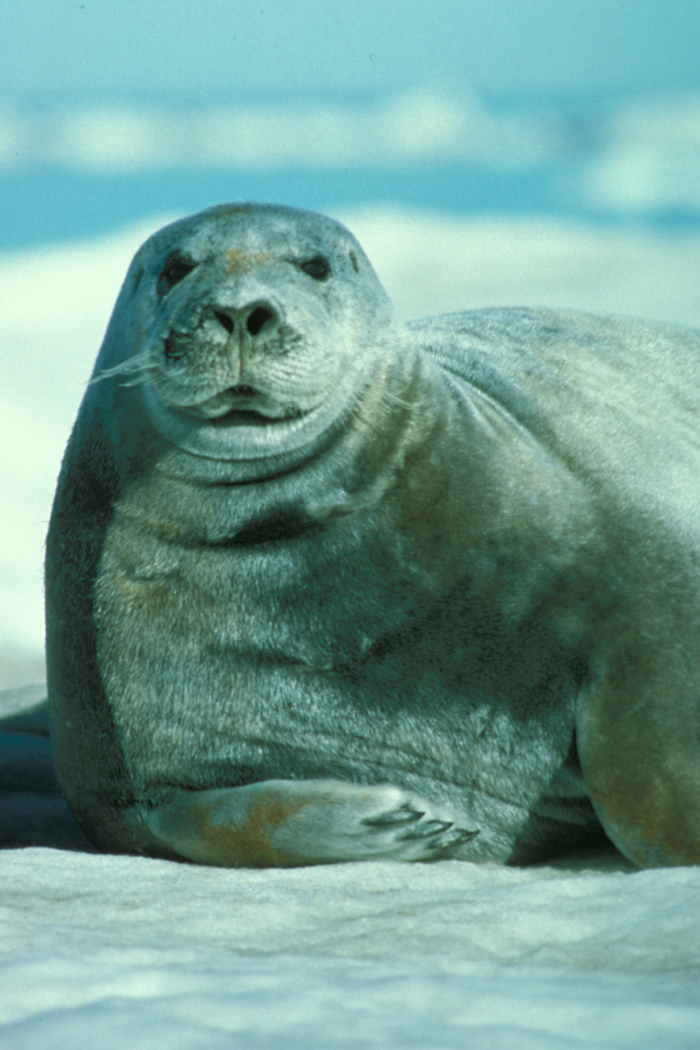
Bearded seal portrait.